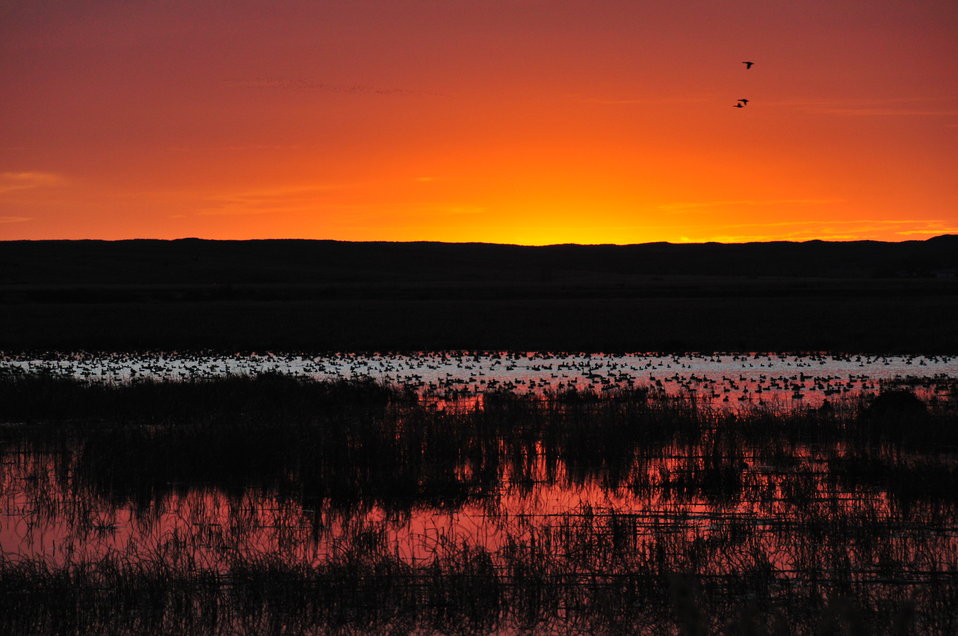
Mallards at sunset on Lacreek NWR